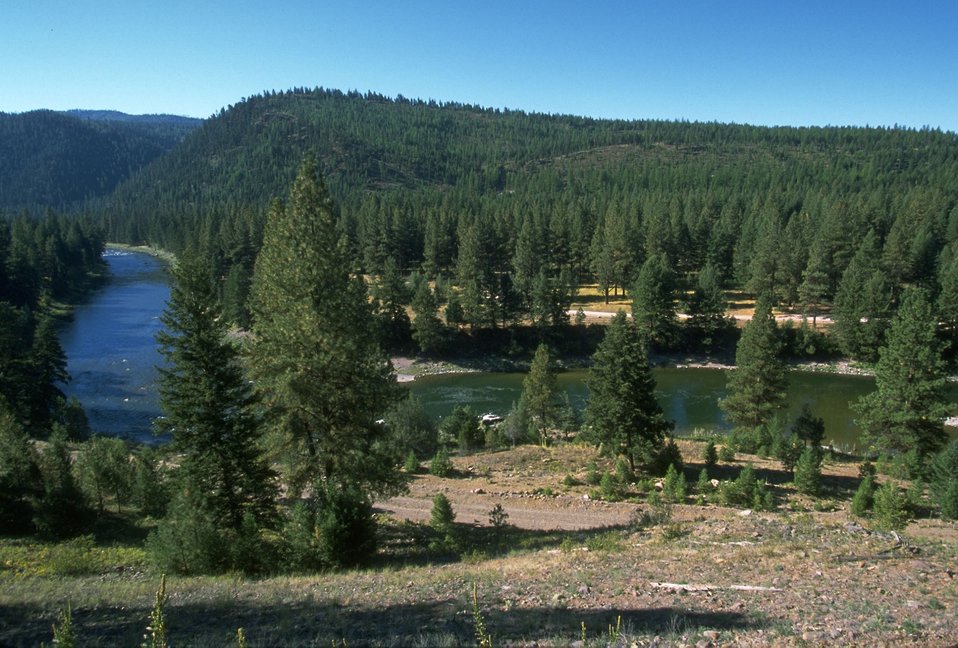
Blackfoot River